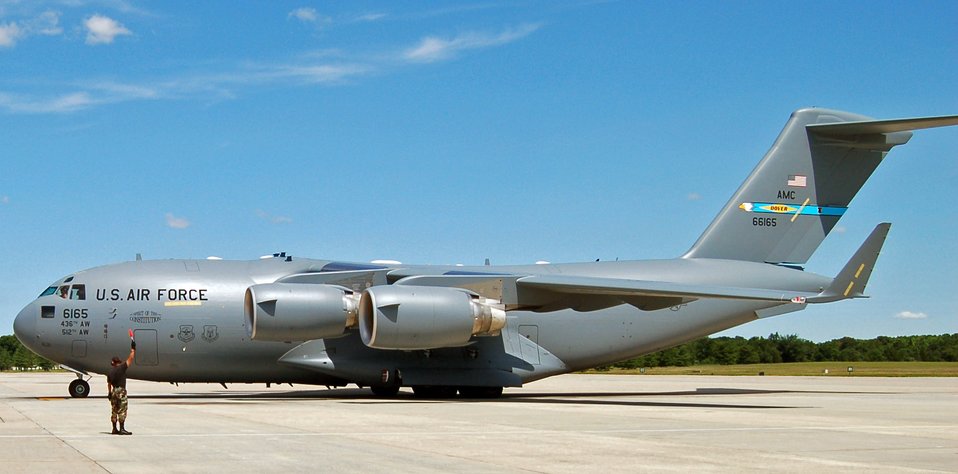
Dover C-17 supports Air Force-Navy exercise

A C-17 Globemaster III from Dover Air Force Base, Del., teamed up with Air Force and Navy fighters in a joint training operation June 29 at Naval Air Station Key West, Fla. The transport moved cargo in support of the exercise.